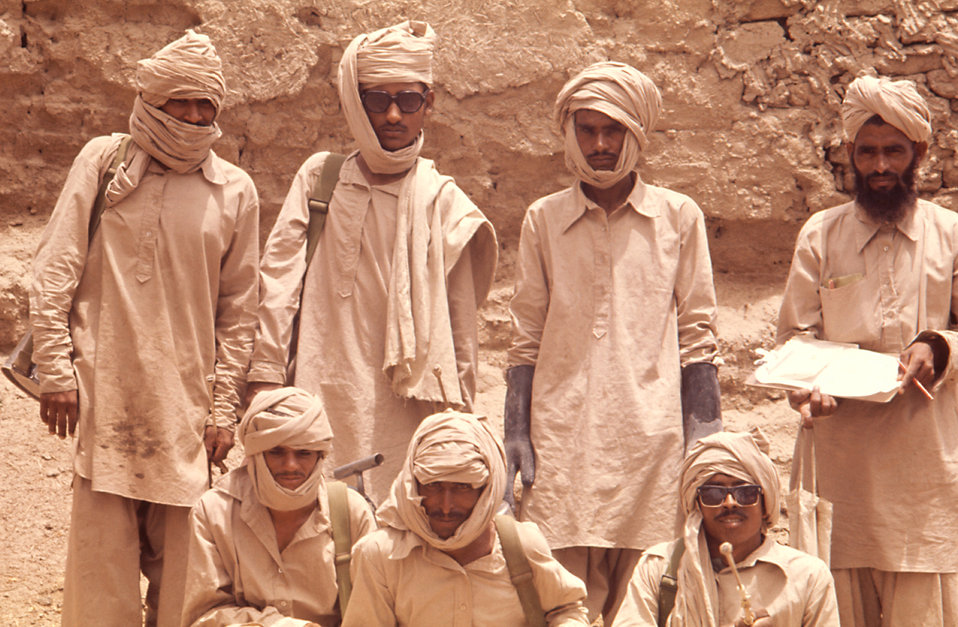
This 1977 photograph depicts what was a typical seven-man Pakistani malathion-spraying malaria control team.